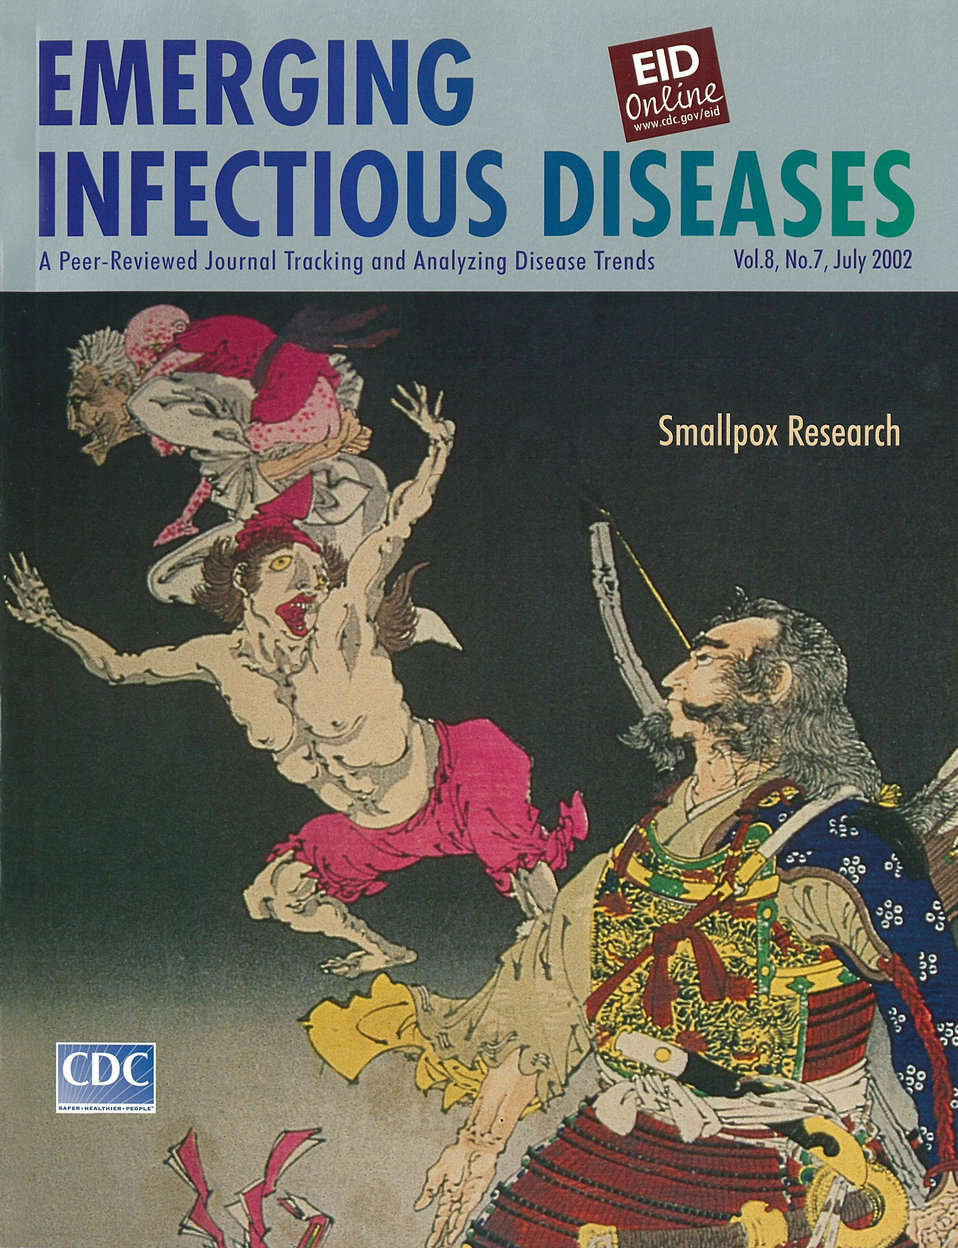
Emerging Infectious Diseases (EID) cover artwork for Volume 8, Number 7, July 2002 issue.